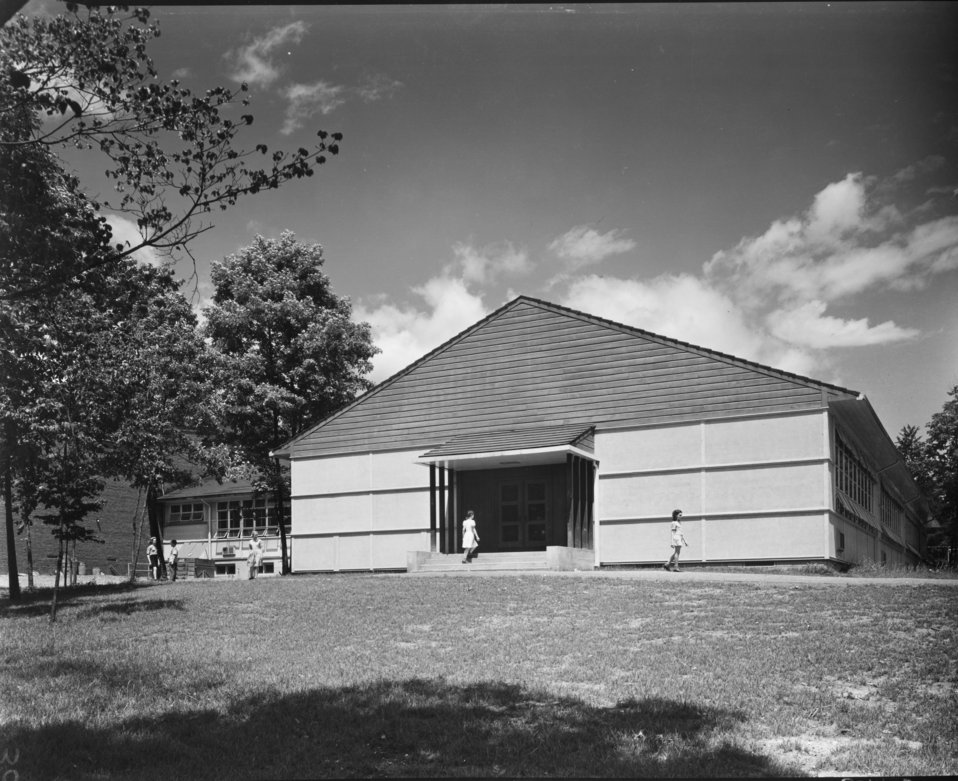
Schools at Oak Ridge